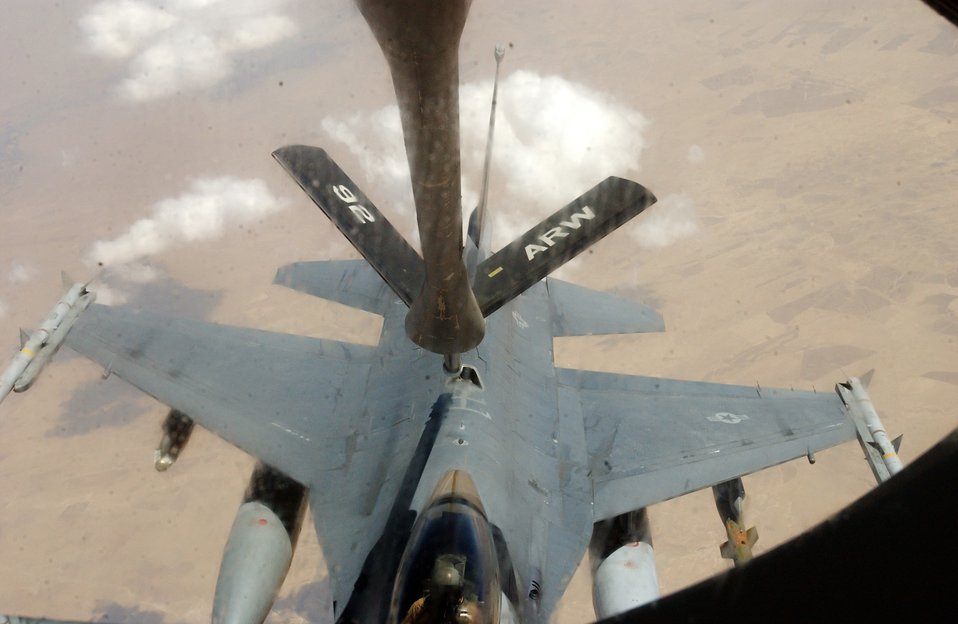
Air refueling missions essential to ground troops

OVER IRAQ -- An F-16 Fighting Falcon moves into place behind a KC-135 Stratotanker. The KC-135 is from the 92nd Air Refueling Wing at Fairchild Air Force Base, Wash., and the crew flying it is from McConnell AFB, Kan. Thirty-five aircraft are refueled on an average day by coalition aircraft.